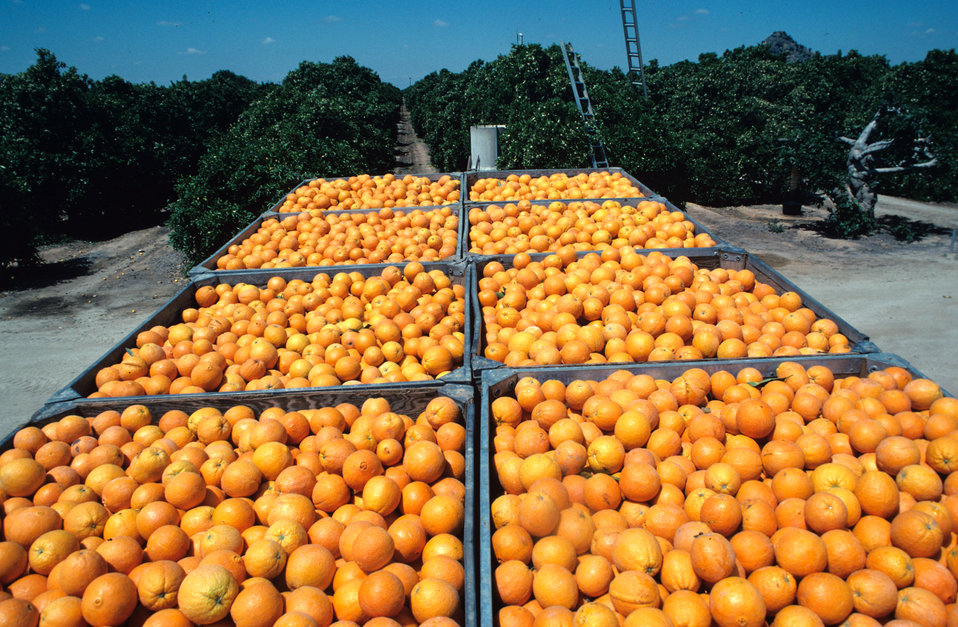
Freshly harvesed oranges awaiit trasportation to market in 1995.